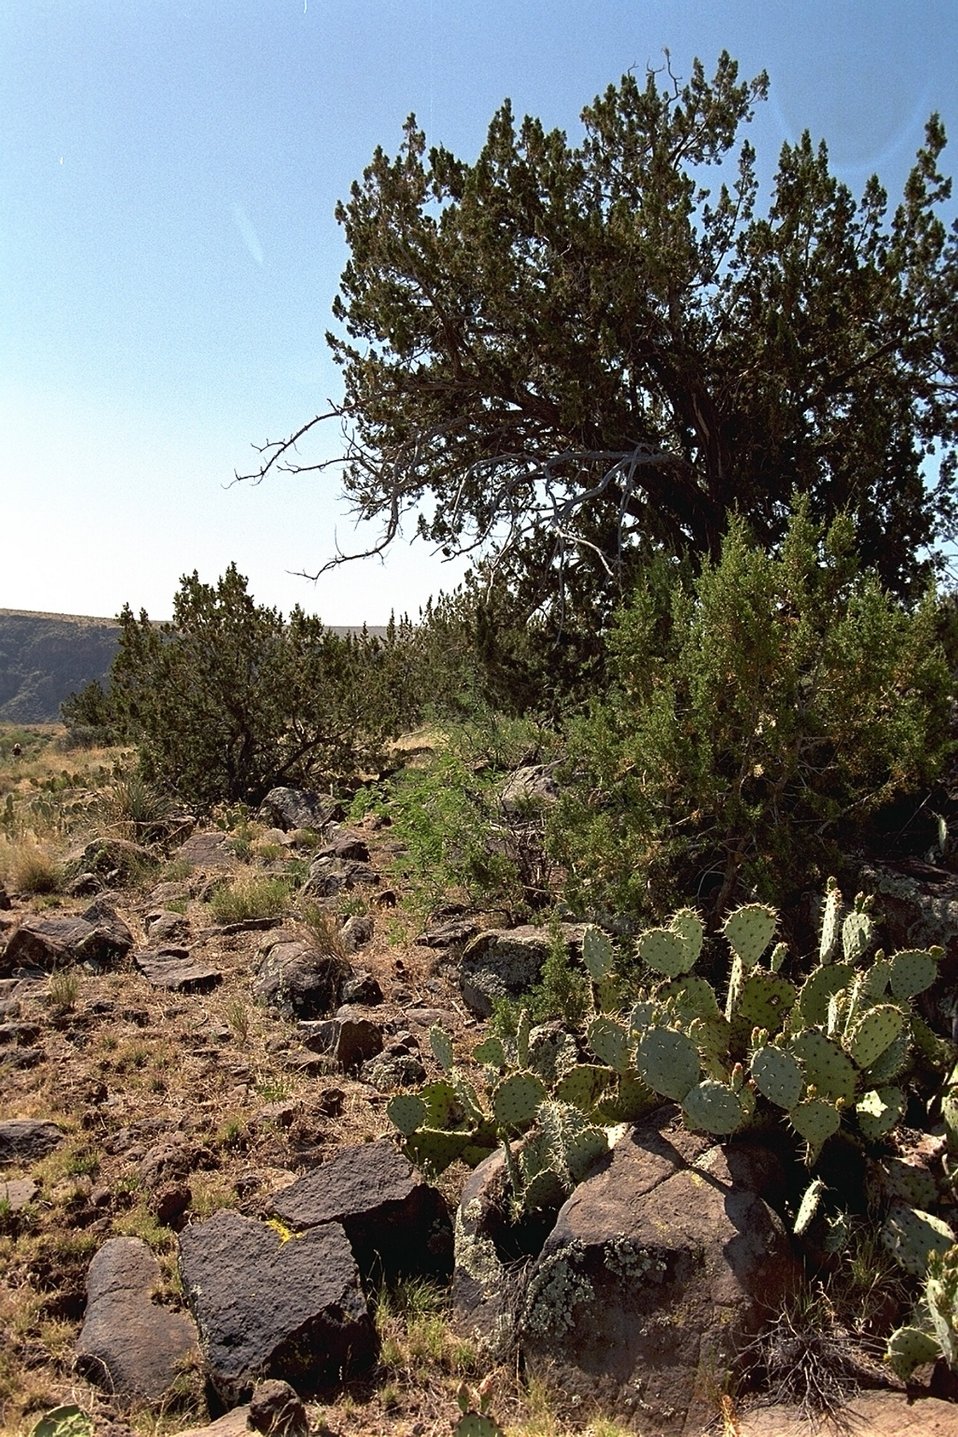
A large tree and some prickly pear cacti on the foreground.